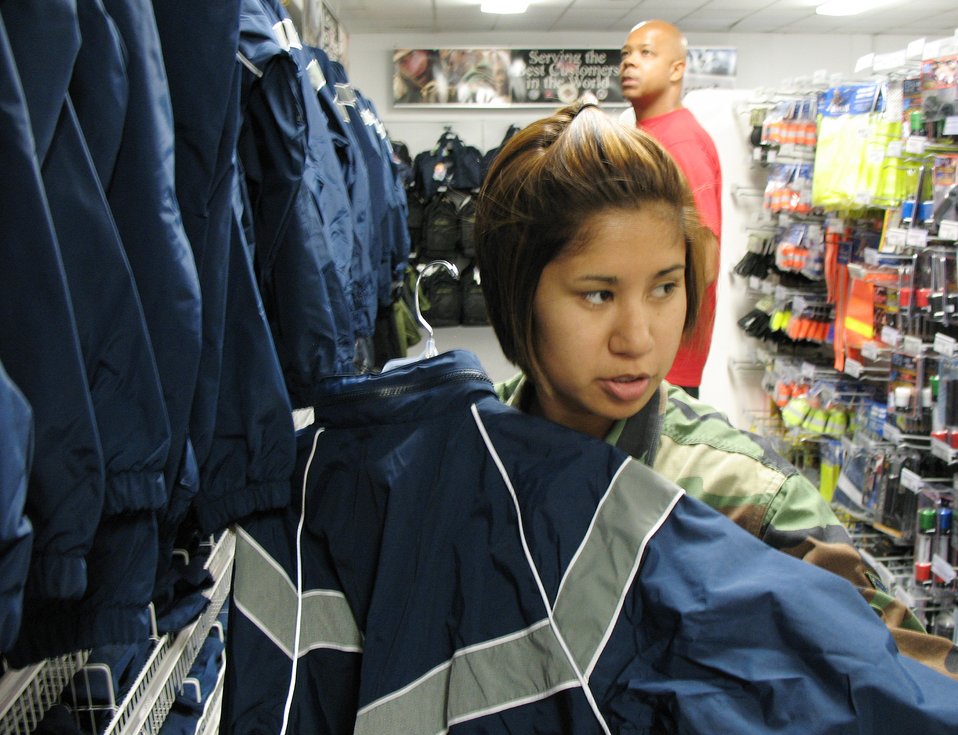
PT gear demand overwhelms clothing sales stores

Airman 1st Class Bianca Cortez sizes up a new Air Force physical training gear jacket at the clothing sales store at Lackland Air Force Base, Texas, on Sept. 19. All Army and Air Force Exchange Service clothing sales stores are preparing for the last minute rush of Airmen wanting to buy the new gear, which becomes mandatory wear Oct. 1. Airman Cortez is a dental technician at the base's 59th Dental Squadron.